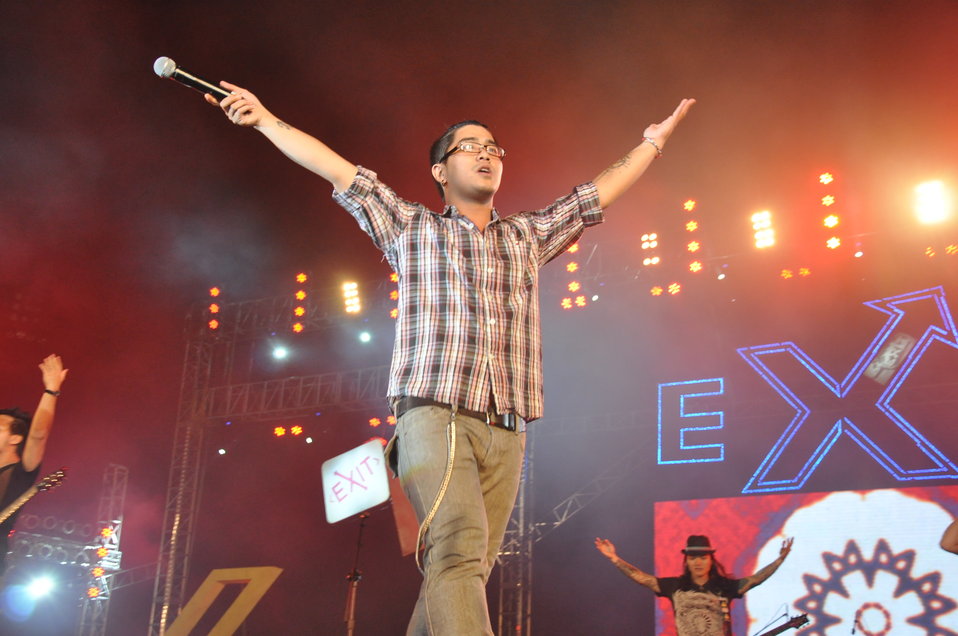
USAID MTV EXIT HCMC Concert

Concert in Ho Chi Minh City against human trafficking, April 17, 2010